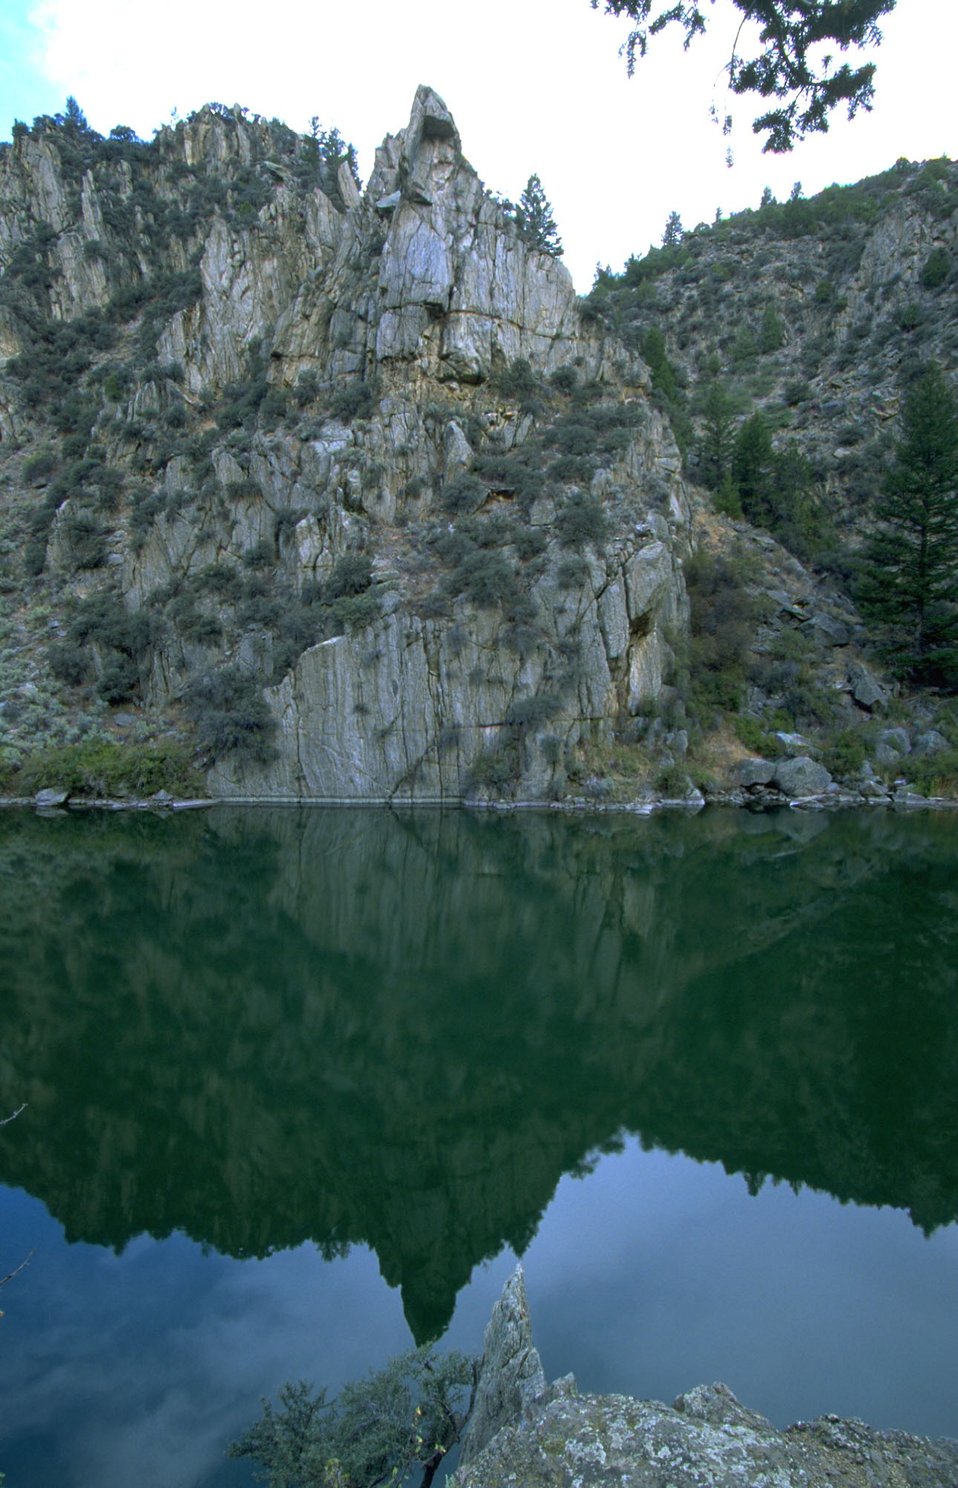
Reflection of Hillside Rock on water